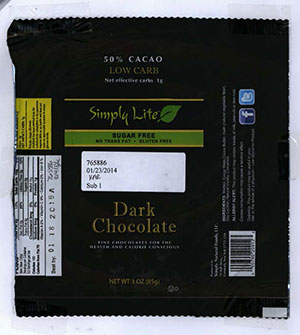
RECALLED – Dark Chocolate Bar

March 17, 2014 – Product Recall – Simply Natural Foods, LLC Issues Allergy Alert for High Levels of Milk Protein in Simply Lite Dark Chocolate Bars.